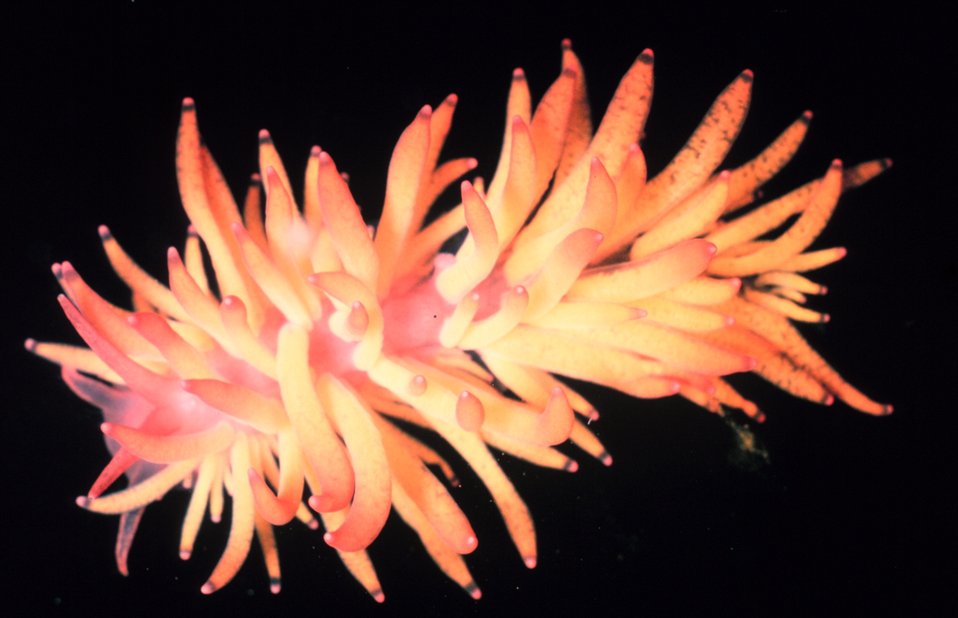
Nudibranch